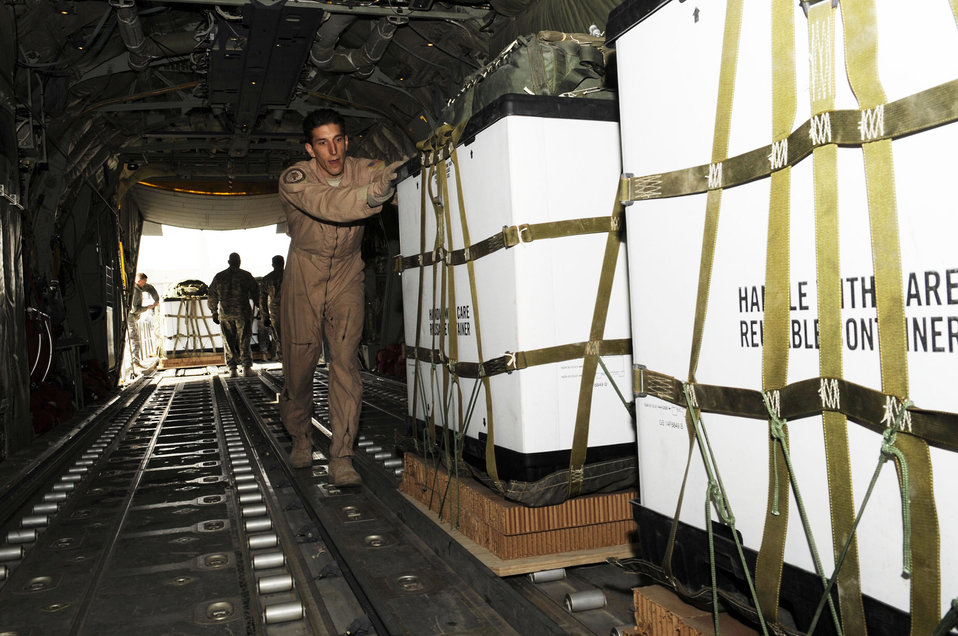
Kandahar Airmen airdrop supplies to troops, prepare for troop increase

Tech. Sgt. Jay Krahl helps upload containerized delivery systems onto a C-130J Super Hercules Jan. 29, 2010, at Kandahar Airfield, Afghanistan. Sergeant Krahl is a 772nd Expeditionary Airlift Squadron loadmaster.